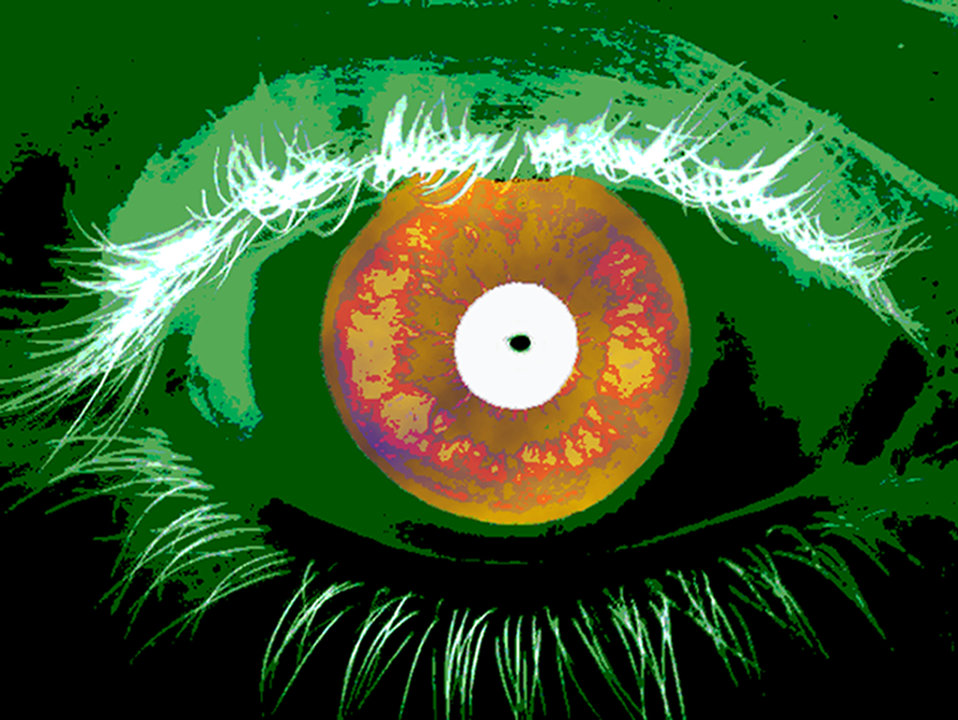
Iris

According to a NIST report, software that identifies people based on scans of the iris, the 'colored' part of the eye that surrounds the pupil, can produce very rapid results, but this speed is often at the cost of accuracy.